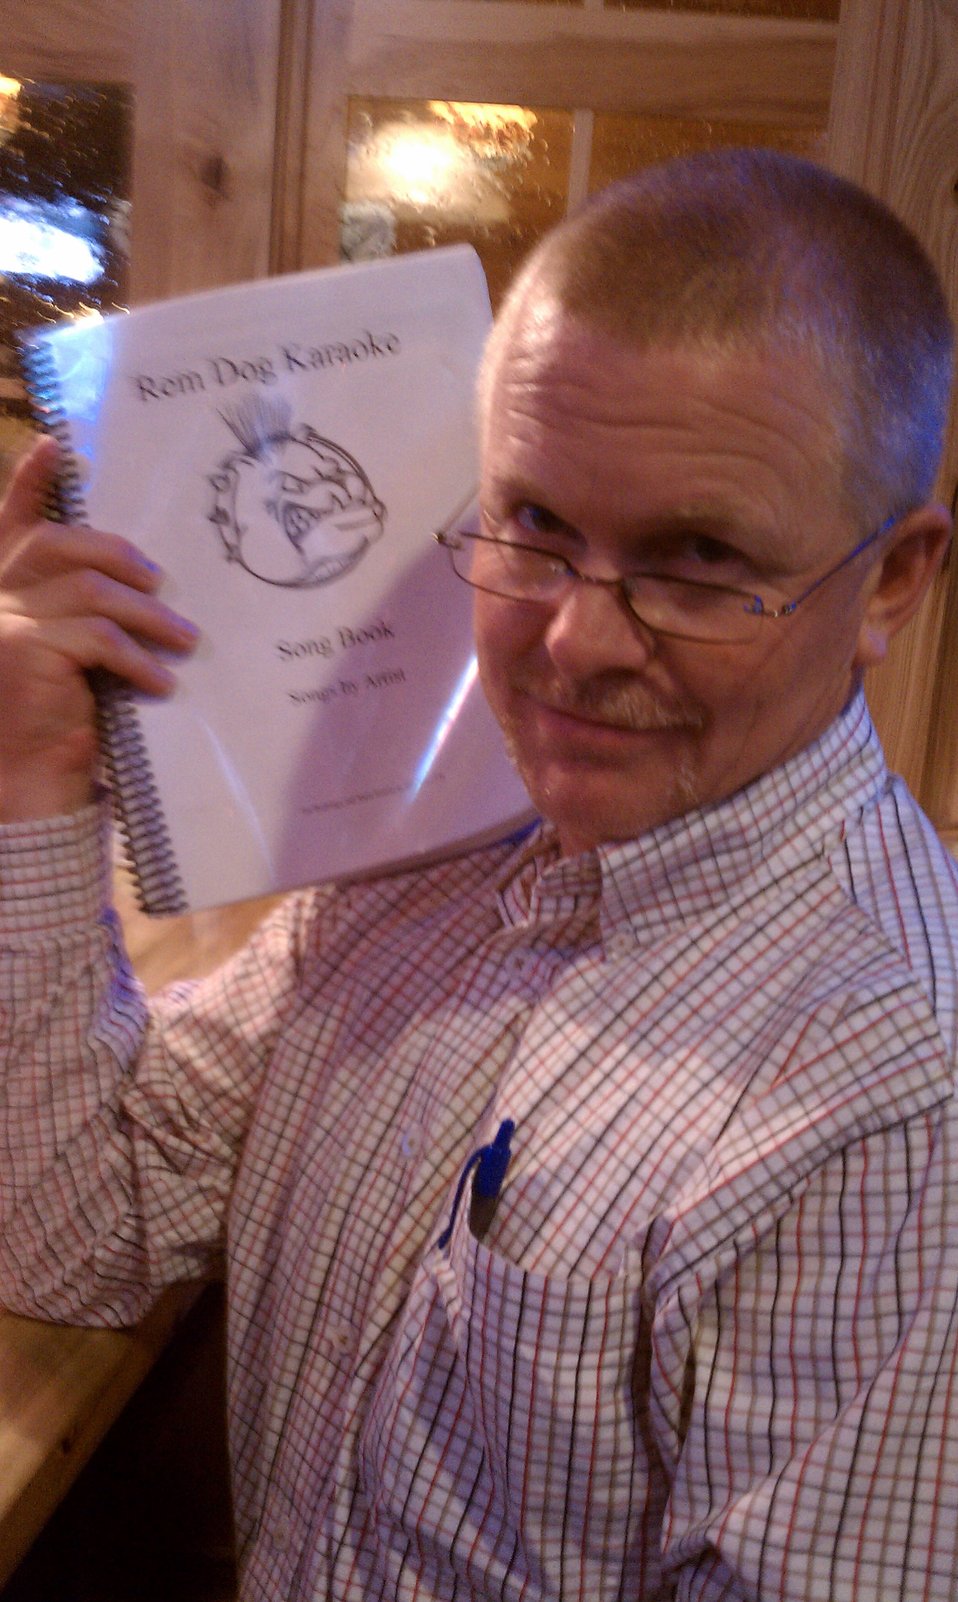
Private Lands Day 2011

South Dakota